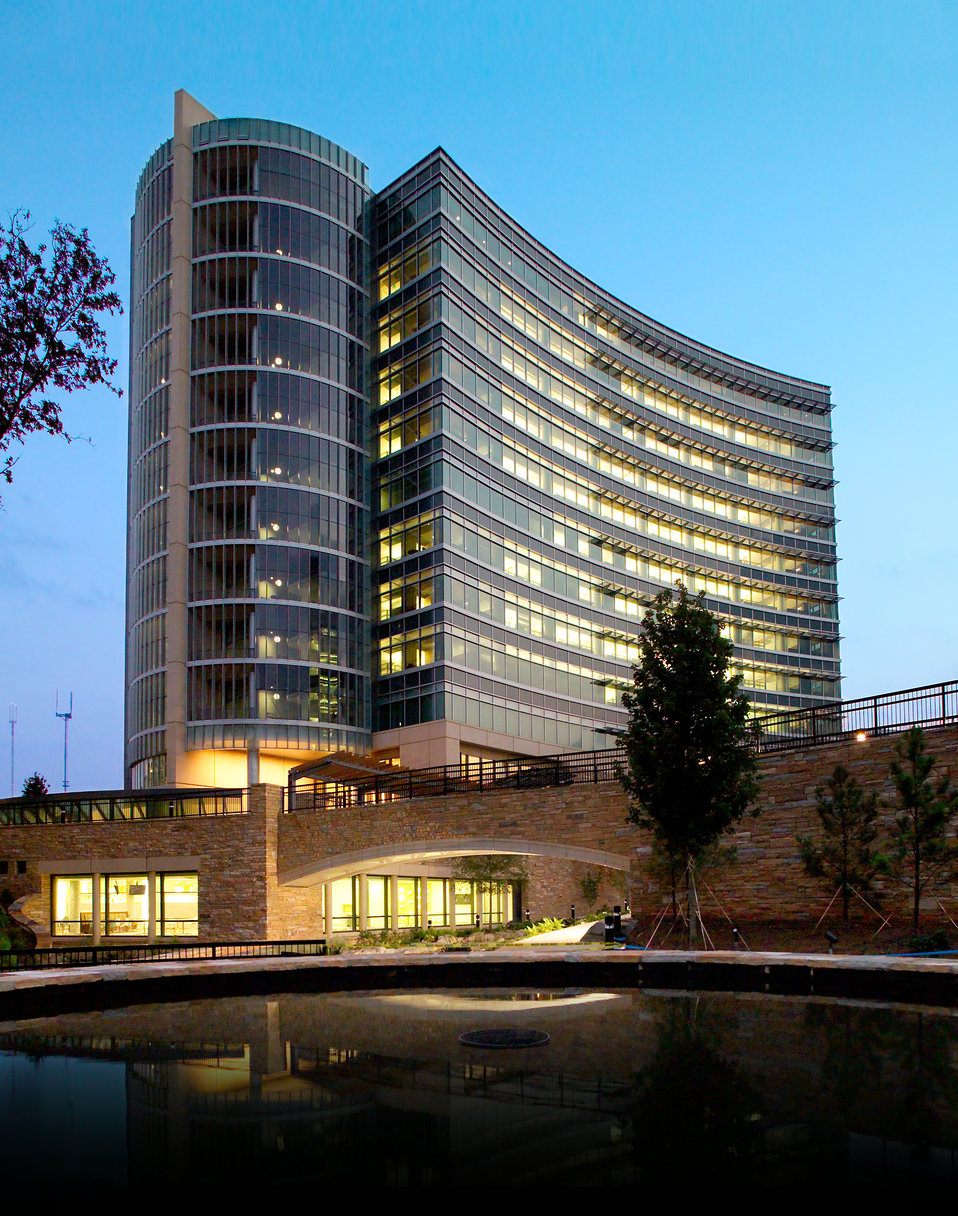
Photographed at dawn in September, 2005, this image depicts the Centers for Disease Control's (CDC) new Headquarters Building located on the organization's Roybal campus in Atlanta, Georgia.